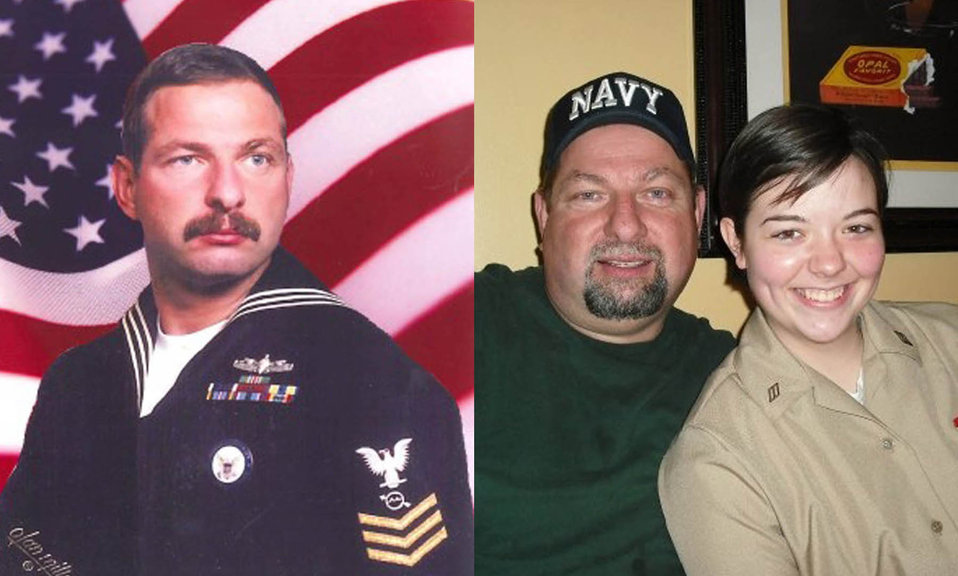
Bill Osborn

William Osborn .
William H. Osborn entered the U.S. Navy in June, 1978, just two weeks after his high school graduation! During his Navy career Osborn served on ships USS Kitty Hawk CV-63, USS Hoel DDG-13, USS Ford FFG-54 and USS Thach FFG-43. His at sea deployments included the Western Pacific, North Arabian Sea and the Persian Gulf during the Iran/Iraq war also during Operation Desert Shield. Petty Officer Osborn’s port calls outside the continental U.S. included six U.S. Territories and fifteen foreign countrys. Wiliiam’s shore based duty stations included Great Lakes, IL; San Diego, CA and Bremerton, WA. Petty Officer Osborn’s personal military accomplishments include qualifications as Anti –Submarine Anti-Shipping Tactical Air Controller, Air Intercept Controller, Master Training Specialist, Command Career Counselor and Enlisted Surface Warfare Specialist. William retired from the Navy as a OS1(SW) or Petty Officer First Class (E-6) in October 1994 during the post Desert Storm troop draw down..
William is married to Susan Osborn, and they have five adult children, four daughters, and one son. They are also in the process of adopting a six-year-old grand-daughter. William is proud to have his second from the youngest daughter Karen follow in his footsteps and serving in the U.S. Navy. Karen is a linguist currently serving at Ft. Gordon, GA..
William joined the federal work force in April 2005 with the National Park Service working at Mammoth Cave National Park, KY and Abraham Lincoln’s Birthplace National Monument in Hodgenville, KY. In April 2006 William joined the U.S. Fish and Wildlife Service at Dale Hollow National Fish Hatchery in Celina, TN. William’s job title is Motor Vehicle Operator but his duties include all aspects of raising Trout from eggs to nine inch stocking size, distribution of fish to various locations in middle Tennessee and northern Alabama, various maintenance jobs and anything else as required at a busy fish hatchery.